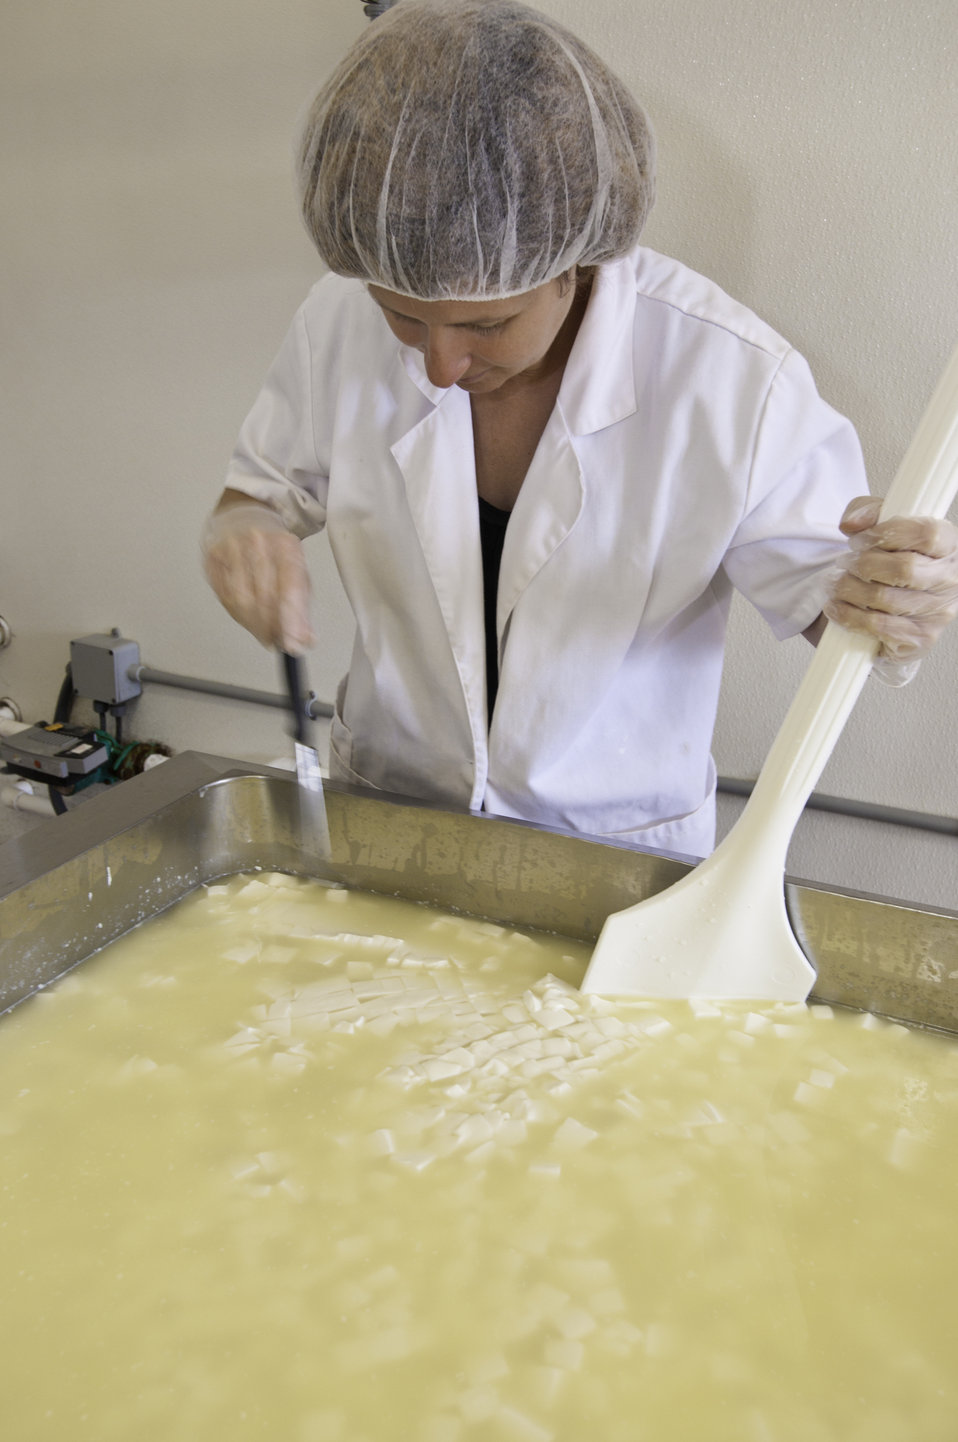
Chapel’s Country Creamery owner Holly Foster in Easton, MD has to constantly stir the milk curd of fresh raw milk so the milk curd that has been cut with curd knives does not set until whey has separated from the curd. The milk produced at the dairy is used to make artisanal cheeses. The dairy uses fresh raw milk 12-24 hours old. The milk is all-natural and contains no synthetic hormones, antibiotics, or chemical compounds. The 1150 pounds of milk in the vat will be used to make the dairy’s “Bay Blue” Cheese.